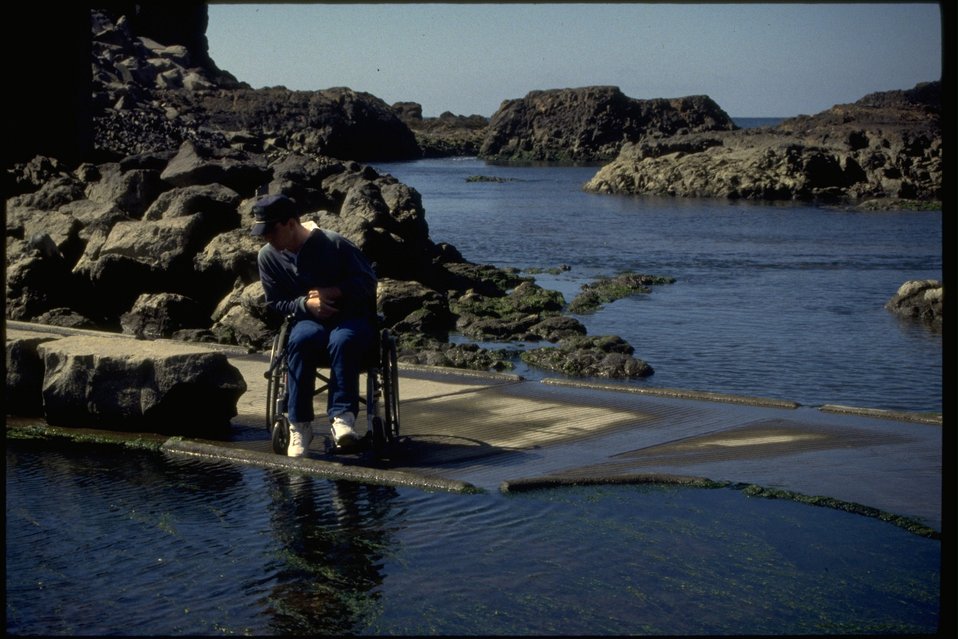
Quarry Cove Tidepools